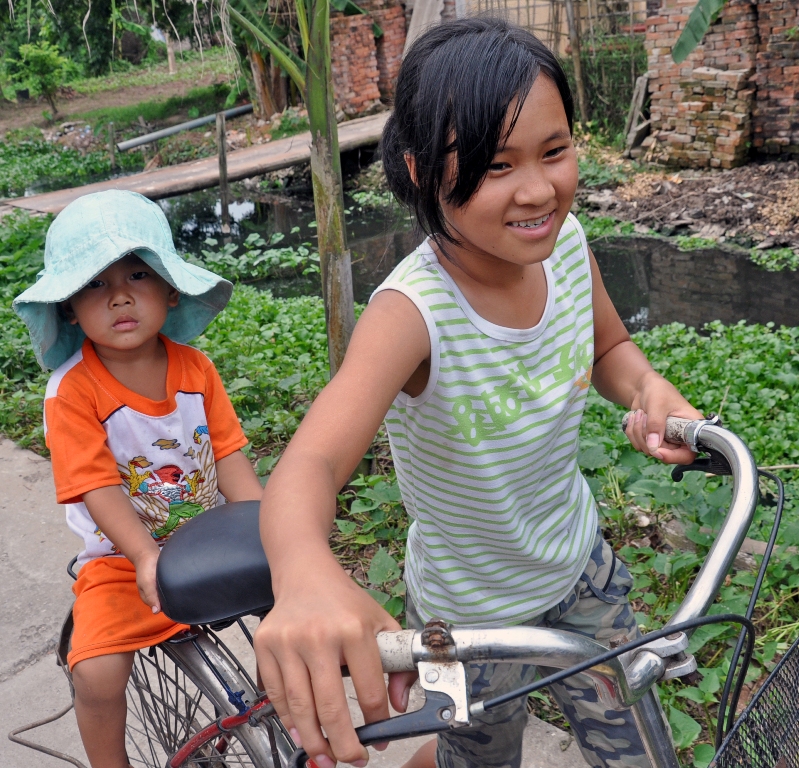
Children make their way by bicycle in Hung Yen village, Vietnam, where USAID works to fight avian influenza